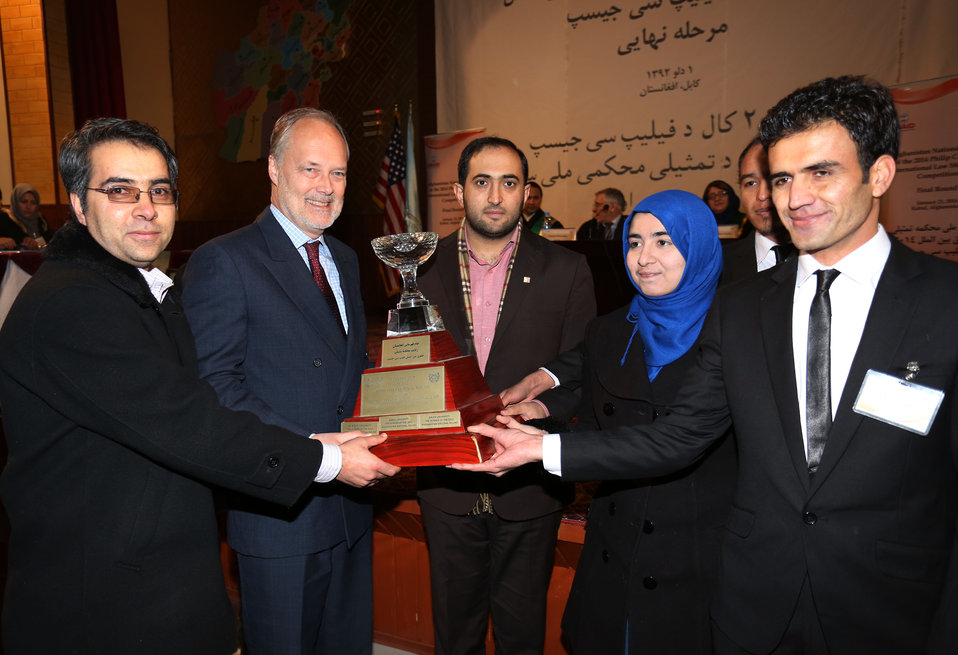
The U.S. Ambassador James Cunningham with the members of the winning team from Herat University.